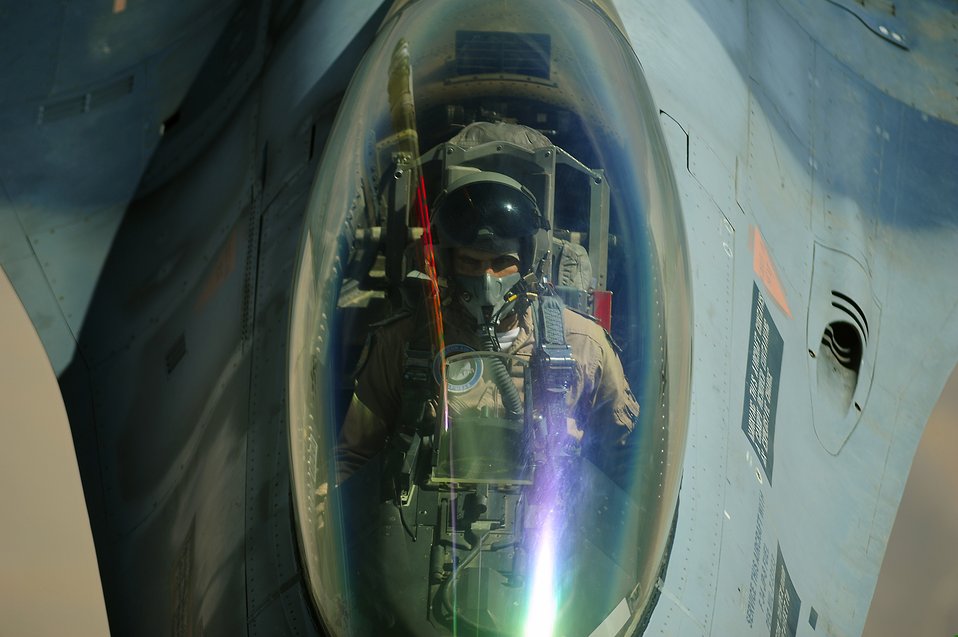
Filling up

A Royal Jordanian Air Force F-16J Fighting Falcon aircraft approaches an airborne tanker Oct. 17, 2011, during an aerial refueling mission in support of Falcon Air Meet 2011 at Shaheed Mwaffaq Air Base, Jordan. FAM is a multi-national exercise and operational activity in Jordan that enhances regional partnerships and interoperability and U.S. commitment to regional security and stability.